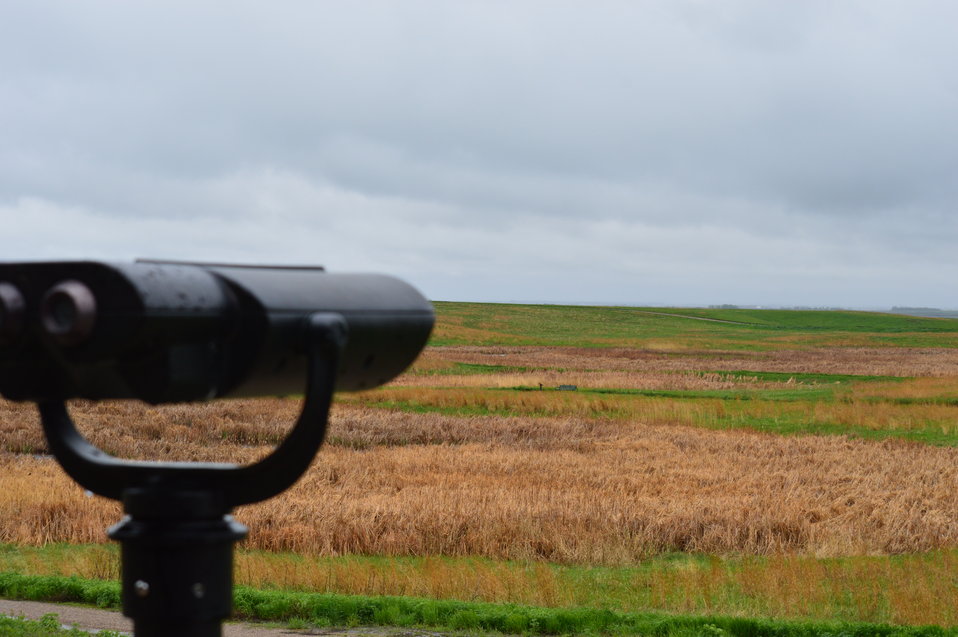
Wildlife Viewing

Scenery and wildlife and Audubon National Wildlife Refuge in North Dakota.